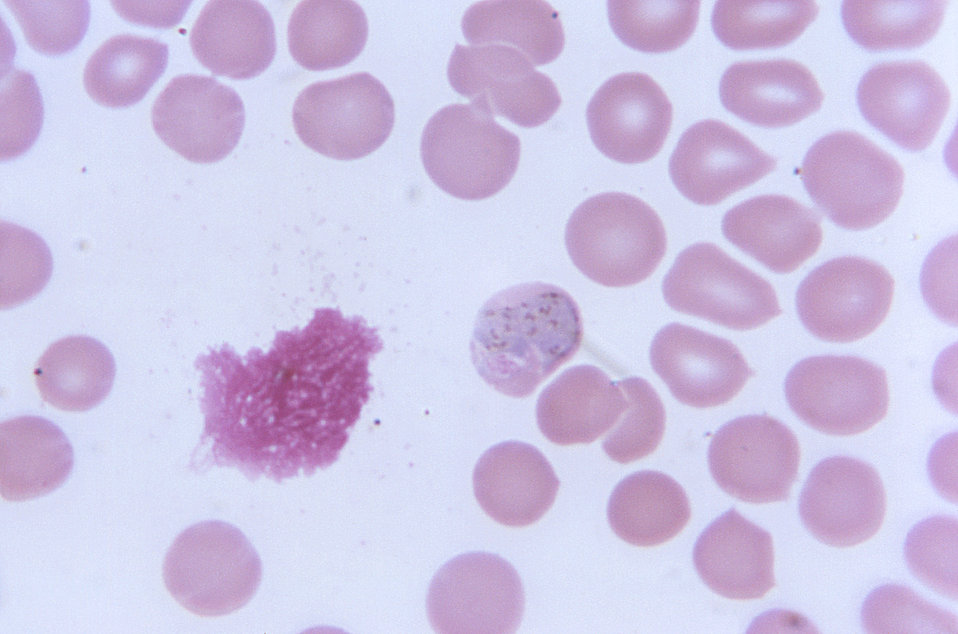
Magnified 1150X, this acid-stained photomicrograph revealed the presence of a parasitic, old Plasmodium vivax trophozoite without any apparent stippling.